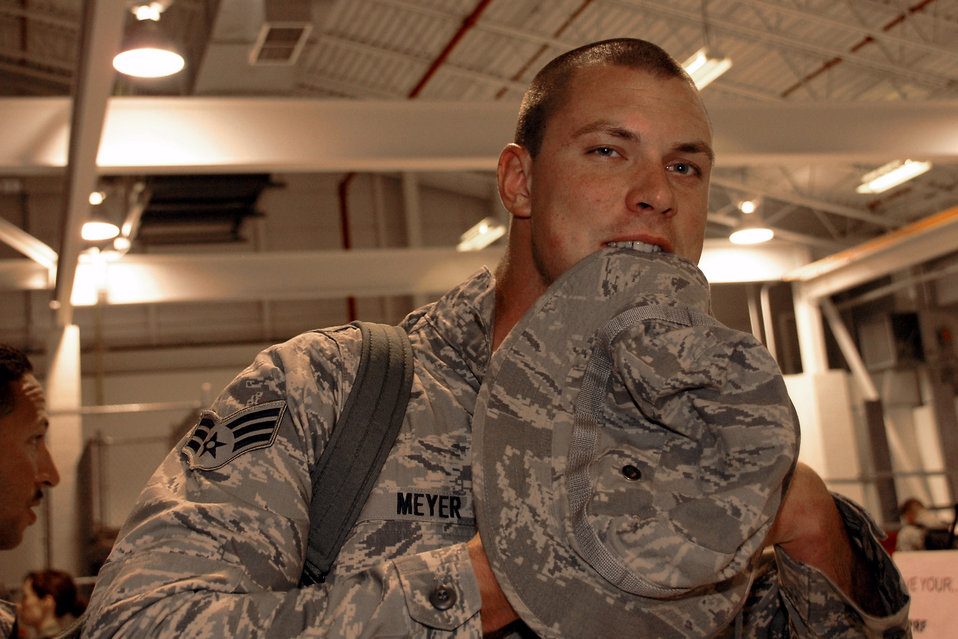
Arriving home!

Senior Airman Tyler Meyer, with the 174th Fighter Wing at Hancock Field, N.Y., has his hands full as he stands in the processing line after returning home Aug. 5 from a deployment to Southwest Asia in support of Operation Iraqi Freedom.